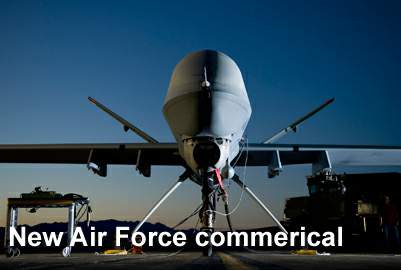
New Air Force commerical highlights unmanned aircraft system

An Air Force commercial highlighting the technology of the unmanned aircraft systems is airing nationally this week in television markets and select movie theaters across the country. The